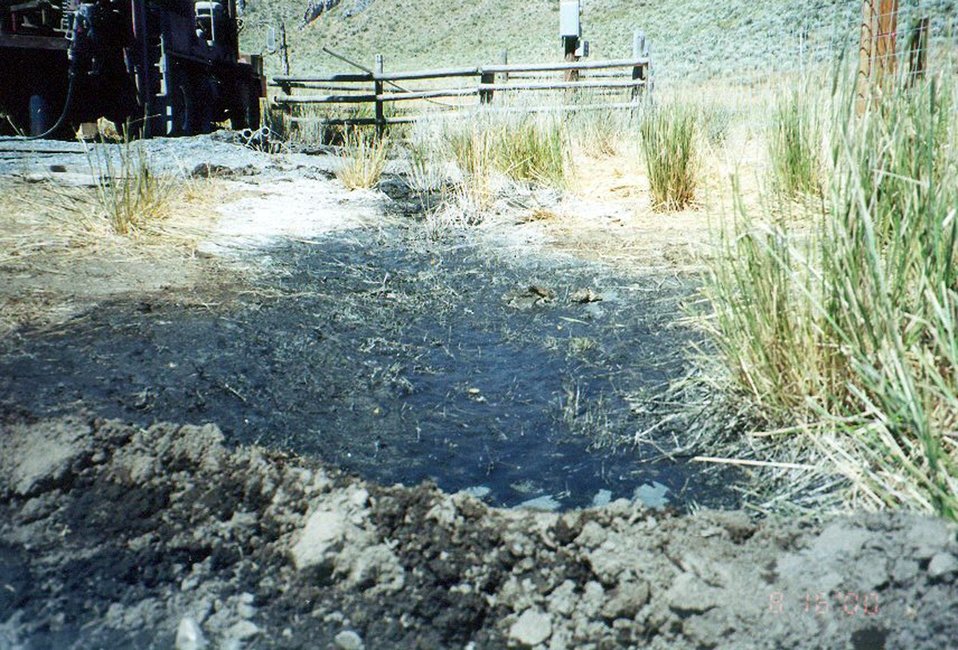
Black sludge from well, result of drilling soap liguifying organic clay and manganese layers in dolomite soil formations Meadow Creek stock water well Burley Field Office USRD Upper Snake River District